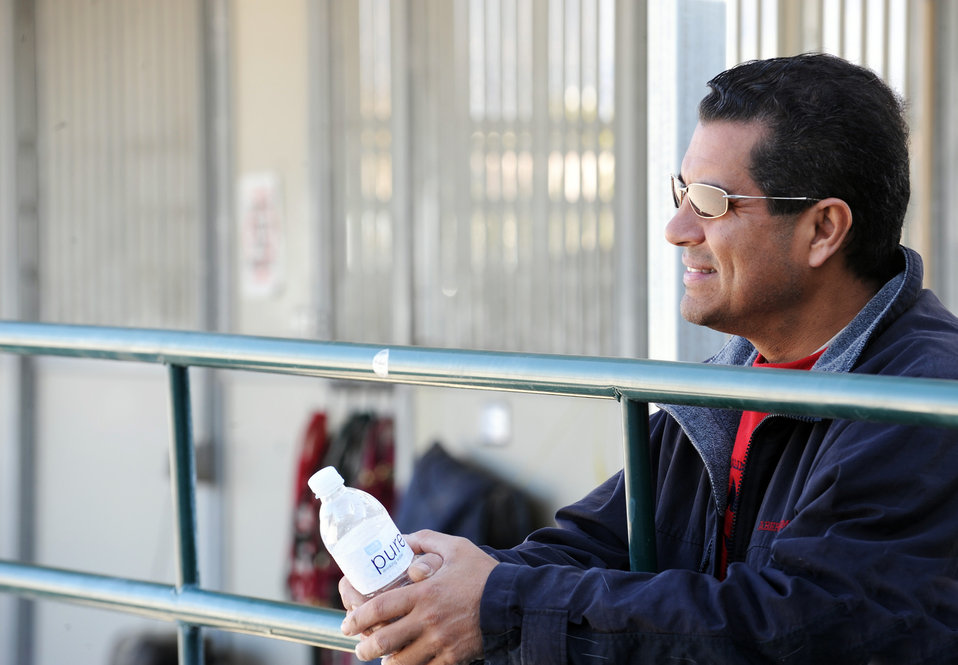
Horses Healing Heroes

Tony Jones, a retired Air Force major and former navigator on an MC-130 Combat Talon gunship, relaxes at the Spirit Therapies equestrian center in Las Vegas, Nev. Major Jones, who was injured in Iraq as a result of a rocket attack, has been participating in the Horses Healing Heroes program for seven months and has noticed dramatic improvement in his ability to deal with stress and severe migraines.